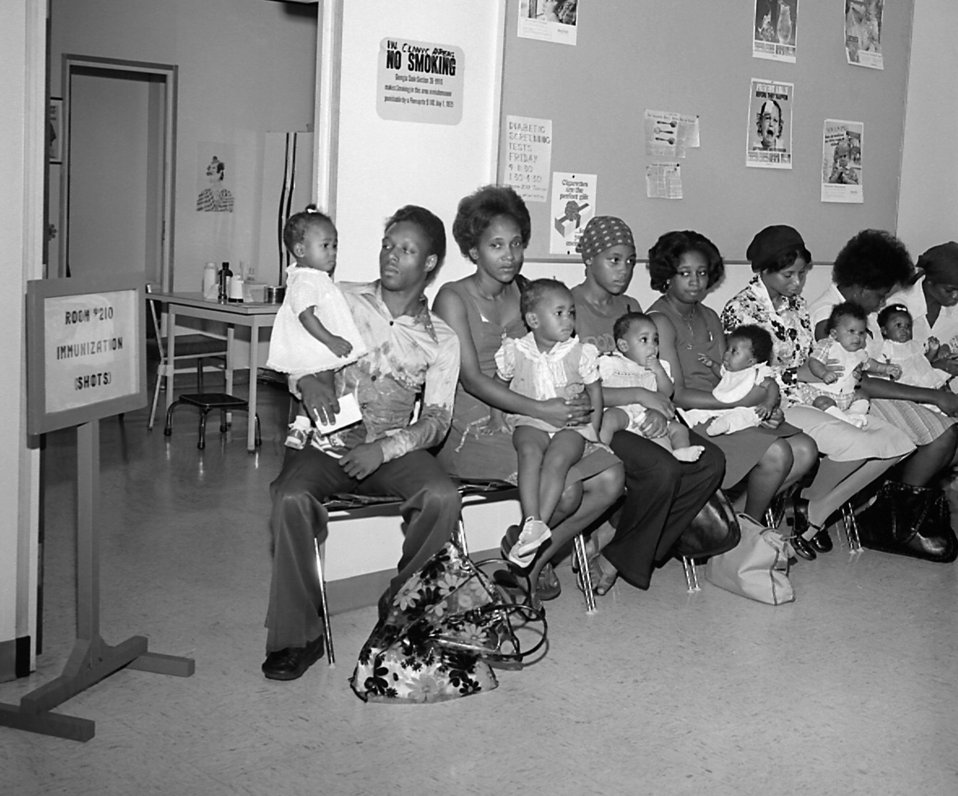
Patients in line at an immunization clinic, 1977.